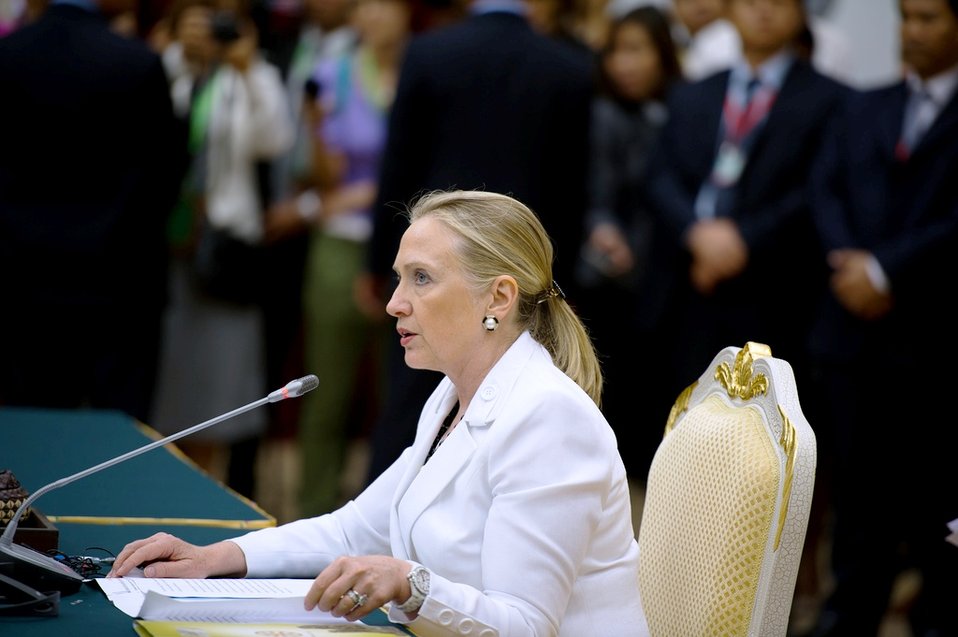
Secretary Clinton Delivers Remarks at the U.S.-ASEAN Ministerial Meeting

U.S. Secretary of State Hillary Rodham Clinton delivers remarks at the U.S.-ASEAN Ministerial Meeting in Phnom Penh, Cambodia, on July 11, 2012.